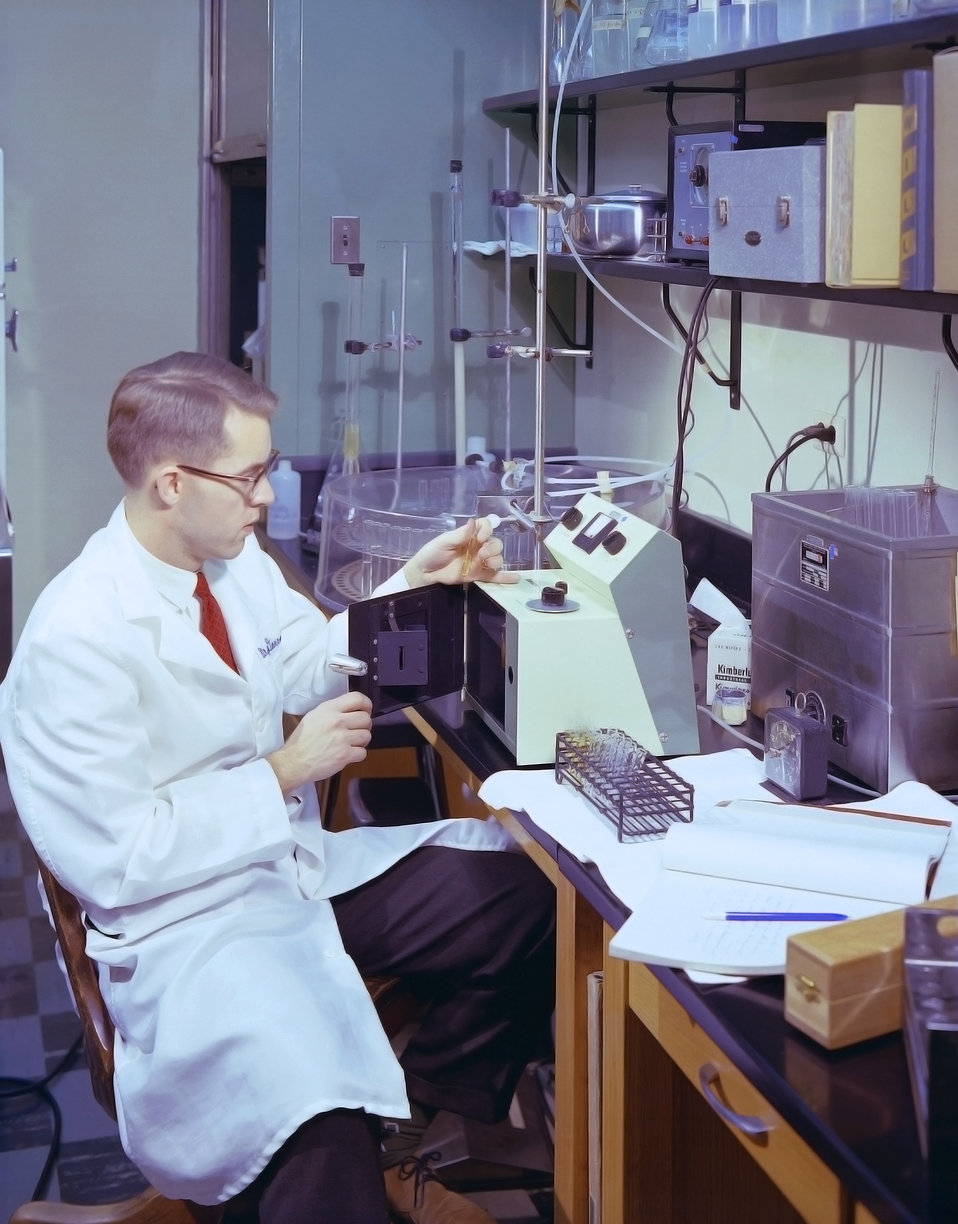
This historic 1963 photograph depicted laboratorian, Dr. Correttson, as he was performing a fluorometric test for phenylketonuria (PKU).